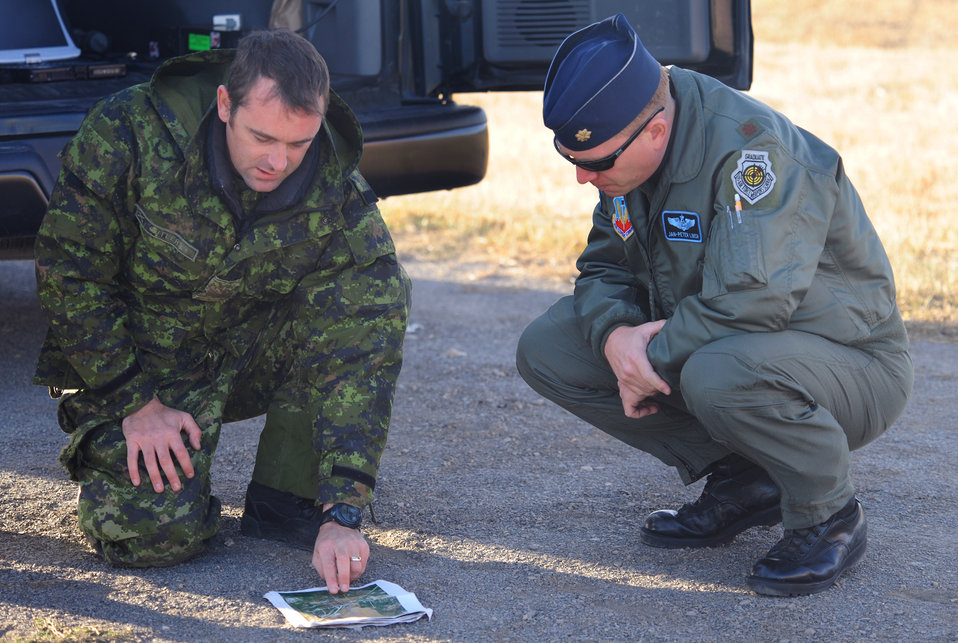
US, Canadian JTACs

(Right) Maj. Jan-Peter Linch and Sgt. Aaron Cutler look over a map during a joint-nation training mission between B-1 Lancer aircrew members and Canadian joint terminal attack controllers Oct. 28, 2010, in Alzada, Mont. The training provided a different perspective for B-1 pilots and JTAC personnel by combining joint-nation training with air to ground support. Major Linch is the 37th Bomb Squadron wing weapons flight commander and Sergeant Cutler is assigned to the 1st Regiment Royal Canadian Horse Artillery.